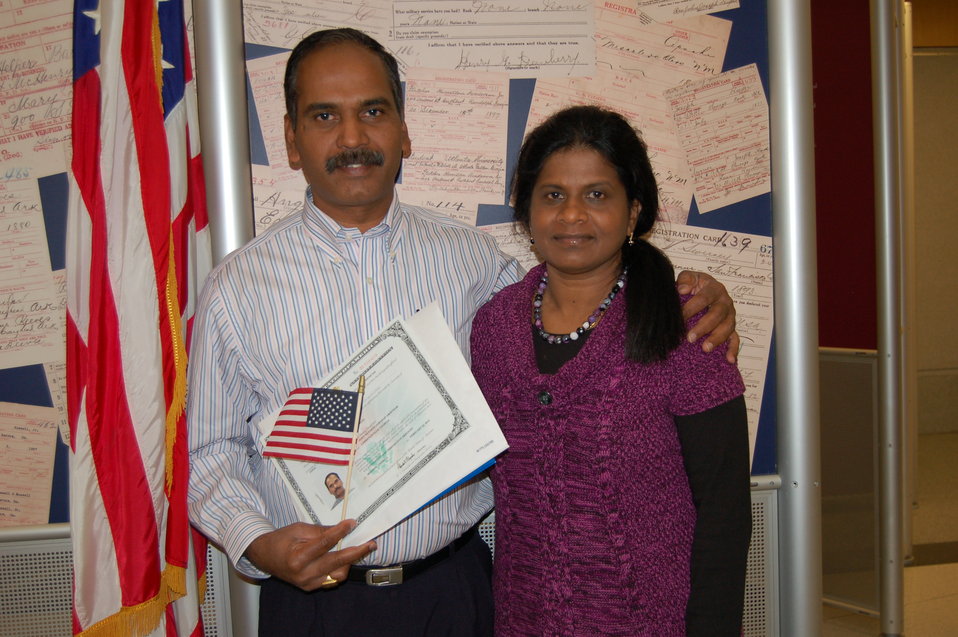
New Citizens